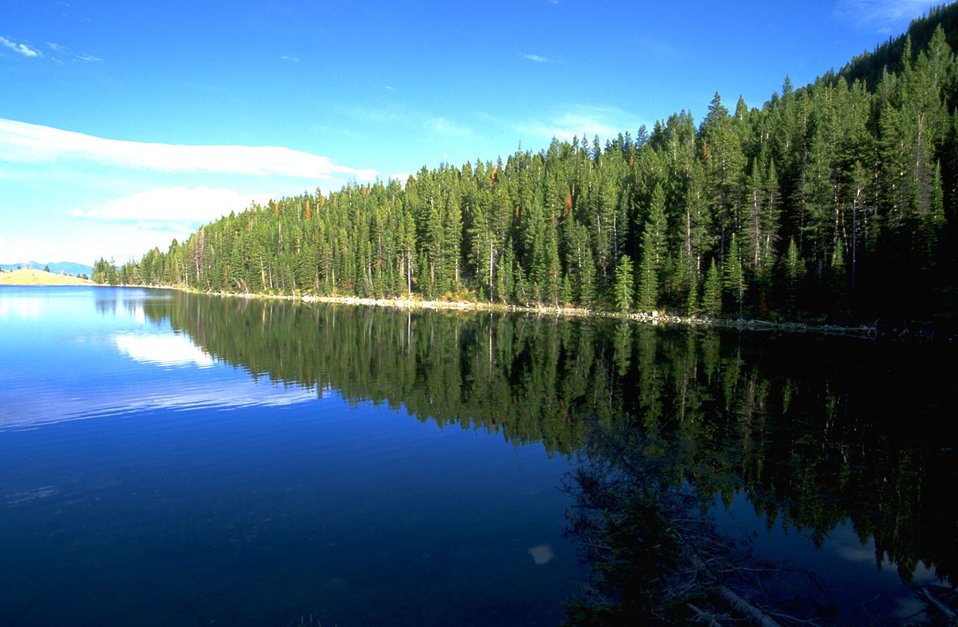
Trees reflecting on Axolotl Lake